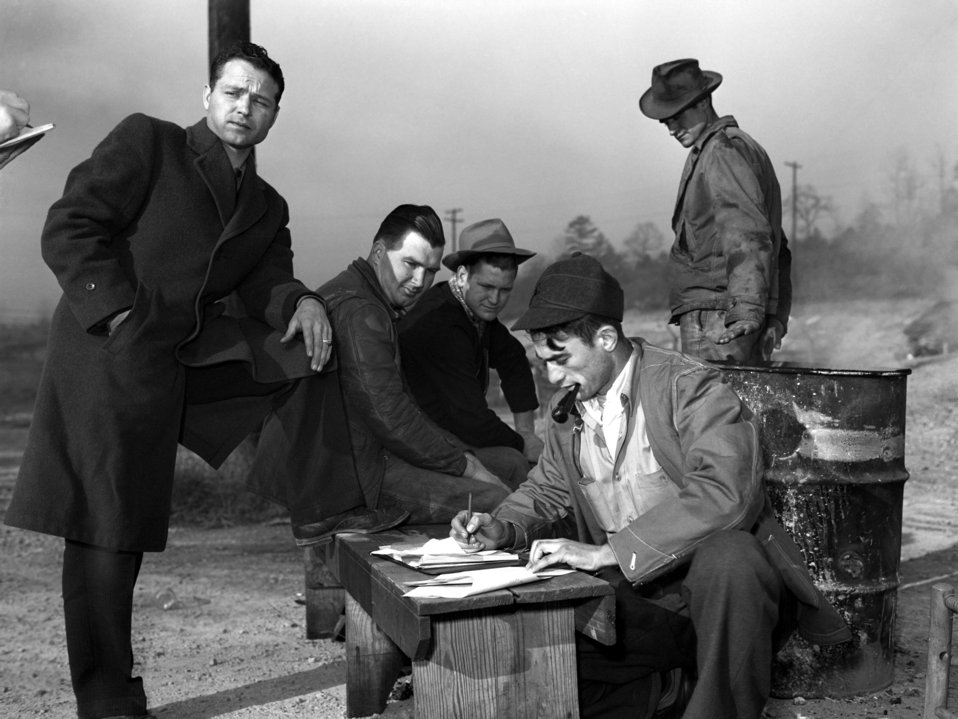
War Assets Auto Sale Oak Ridge 1947

3293-3cpa DOE photo Ed Westcott 2-13-1947 L to R E.C. Cravens, Fred Smith Jr., and Danny W. Clark